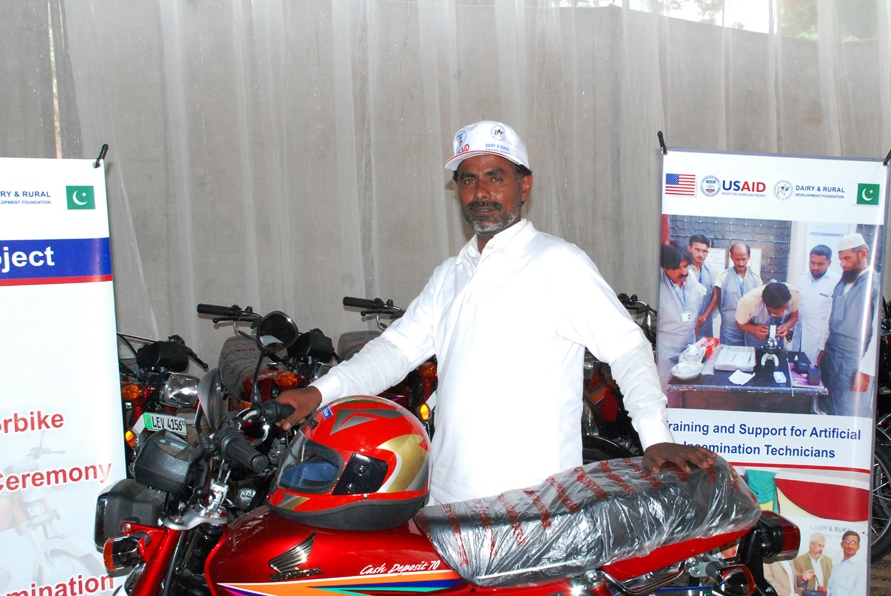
A successfull AI technician with his new motorcycle awarded by USAID Dairy Project